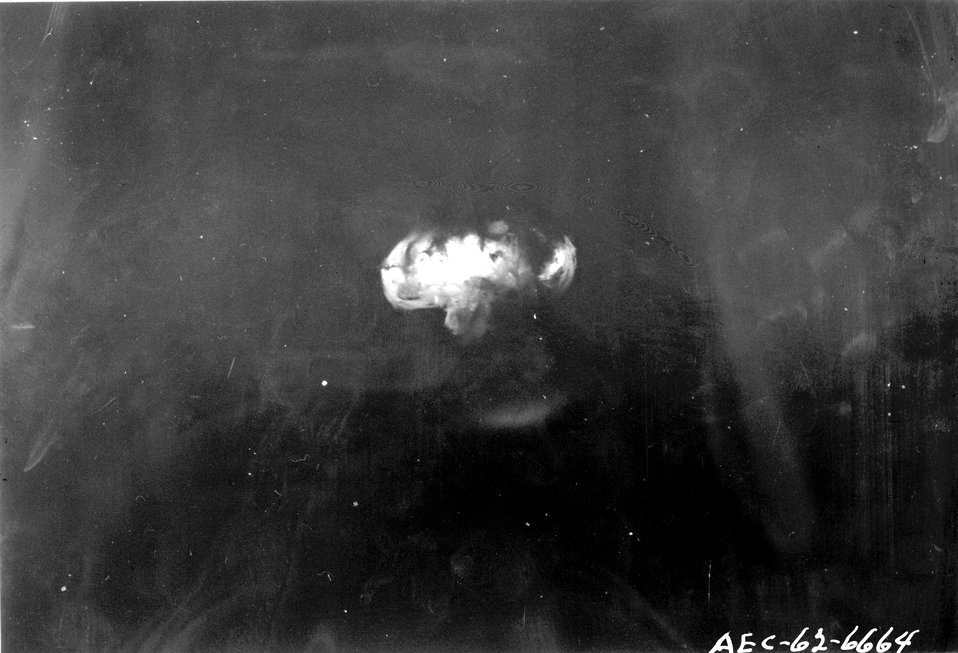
Christmas Island